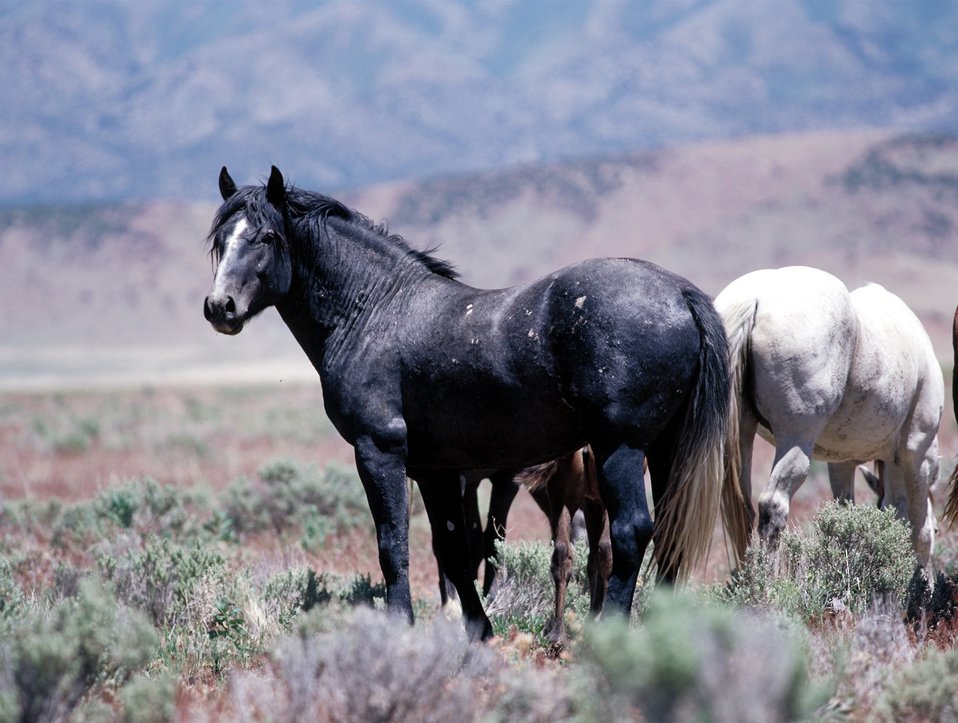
Onaqui Herd near Dugway, Utah.